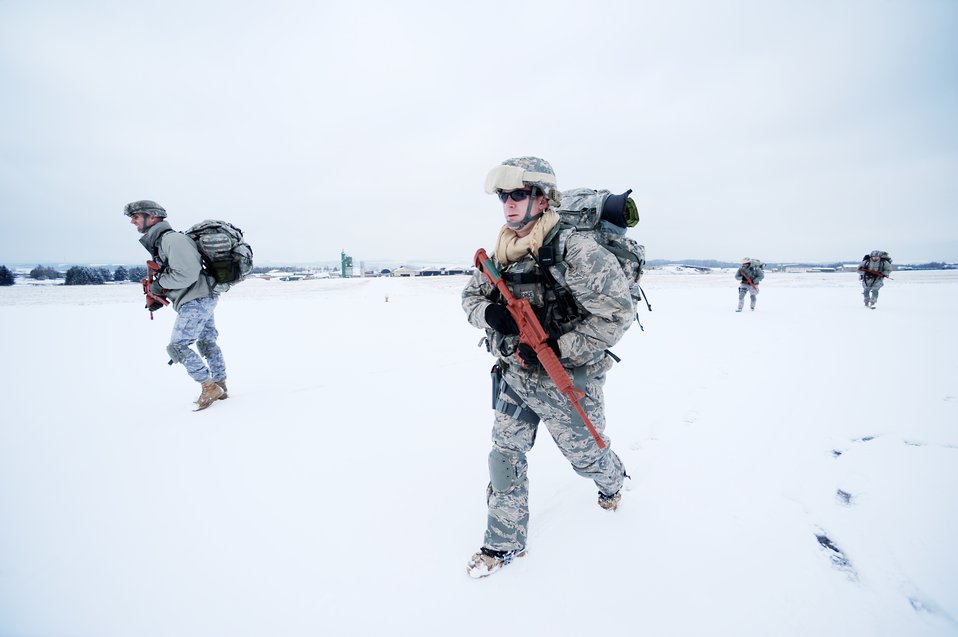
Ramstein forces practice air insertion

Capt. Mark Breed and Staff Sgt. John Gaunt from Ramstein Air Base, Germany, make their way to the rally point after an airborne insertion mission at nearby Bitburg Airport Jan. 25, 2010.